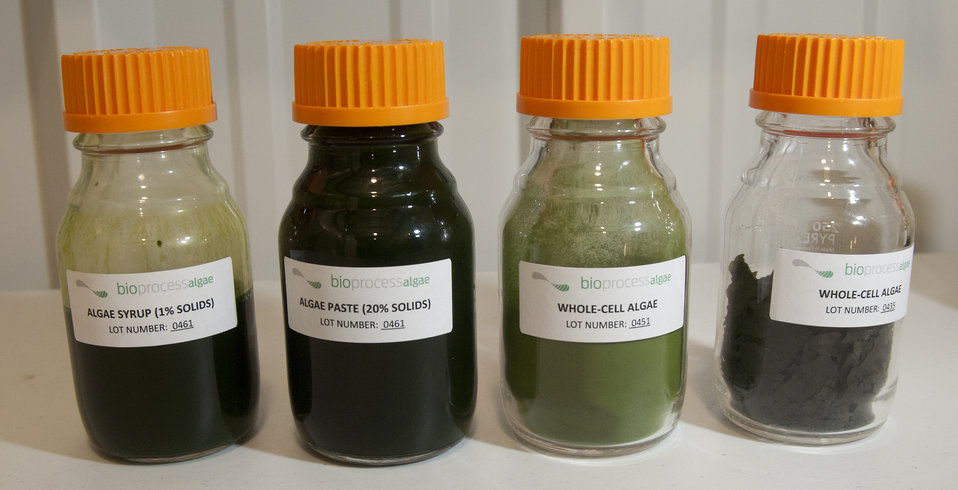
These are samples of aquaculture feed produced from algae. Aquaculture is the fastest growing segment of agriculture. Americans consume more fish and shellfish from aquaculture than from wild catch. Aquaculture operations rely heavily on live algae during critical phases of some life cycles and aquaculture feed from algae is a cost effective way to supply this critical food source. Agriculture Secretary Tom Vilsack toured the BioProcess Algae facility at Green Plains Renewable Energy (GPRE), Inc. on Friday, Apr. 5, 2011 in Shenandoah, IA.